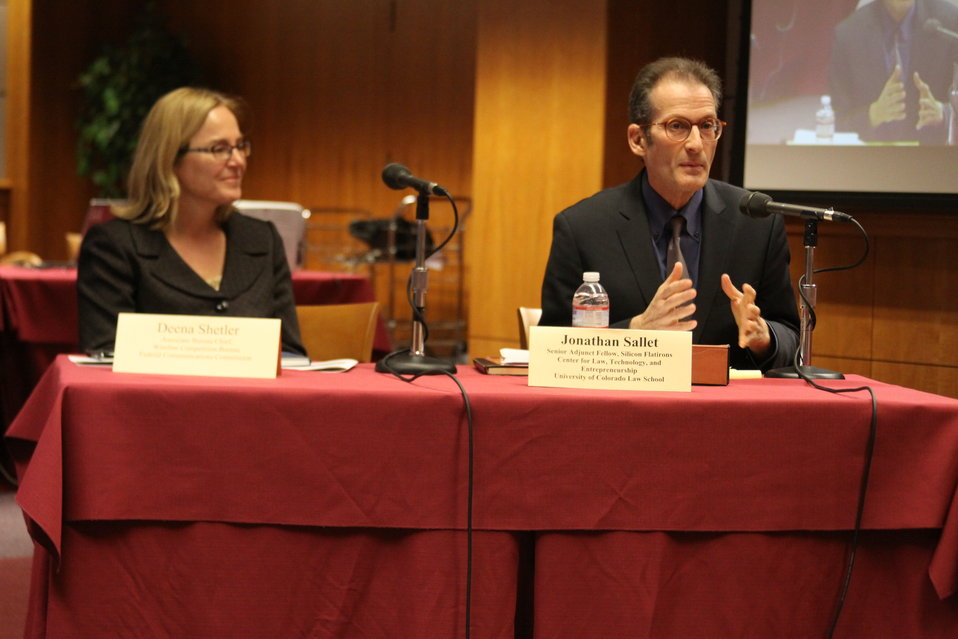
March 27, 2013 Gigabit City Challenge: Broadband Networks Workshop Panel 1: What Communities Can Do With A Gigabit, moderated by Jonathan Sallet, Senior Adjunct Fellow, Silicon Flatirons Center for Law, Technology, and Entrepreneurship, University of C